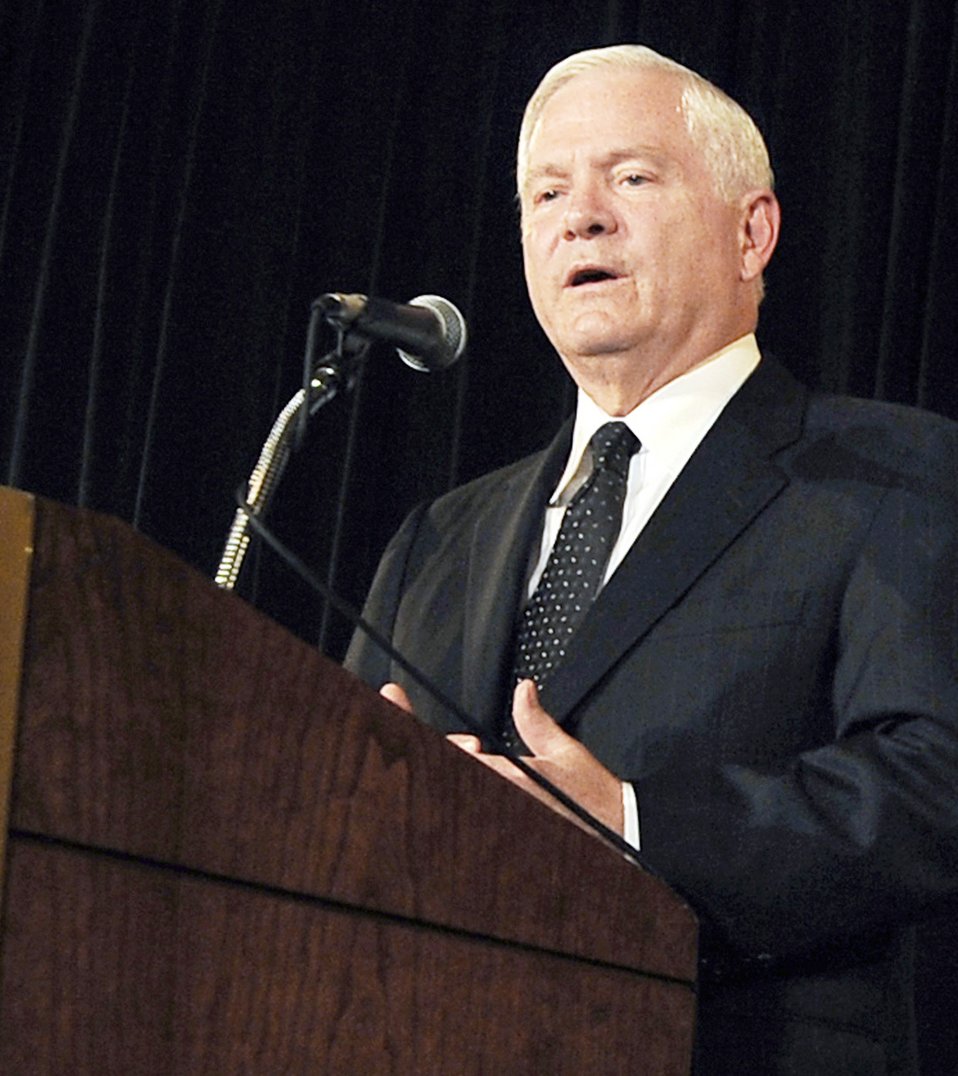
Top leaders spell out president's strategy

Defense Secretary Robert M. Gates speaks to members of the Economic Club of Chicago July 16, 2009, in Chicago. Secretary Gates and other top U.S. government and military officials appeared on three major networks Dec. 6, 2009, in Washington, to spell out President Barack Obama's new war strategy.